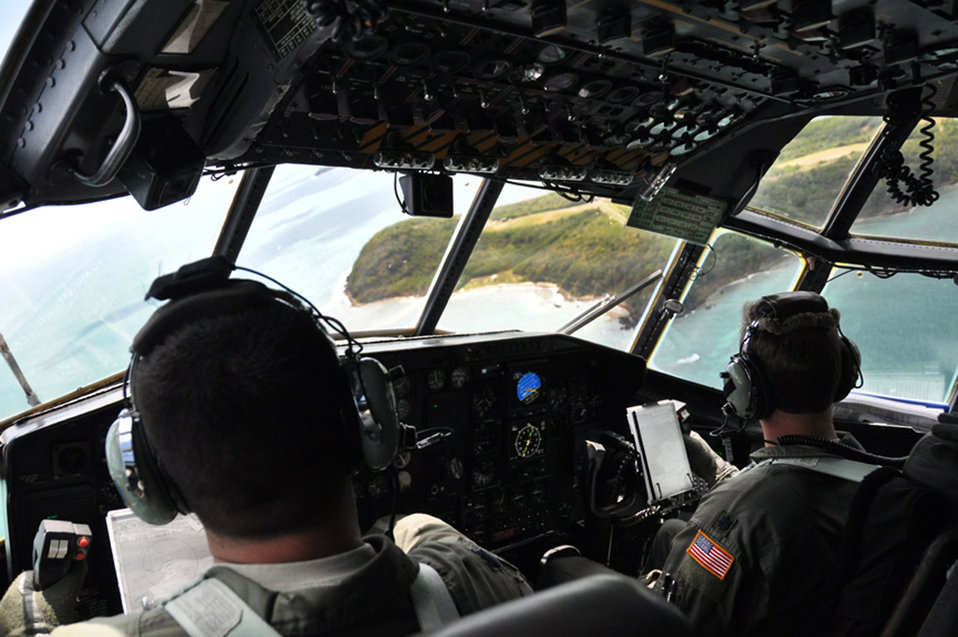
Vigilant Guard Exercise

Two North Carolina Air National Guard pilots fly a C-130 Hercules over the island of Puerto Rico as part of the hub-and-spoke mission executed by Airmen from the 621st Contingency Response Wing at McGuire Air Force Base, N.J., during the Vigilant Guard exercise held March 23 to 29. The large-scale disaster relief exercise incorporated Puerto Rican and federal agencies and more than 80 CRW Airmen spread throughout five locations in Puerto Rico.